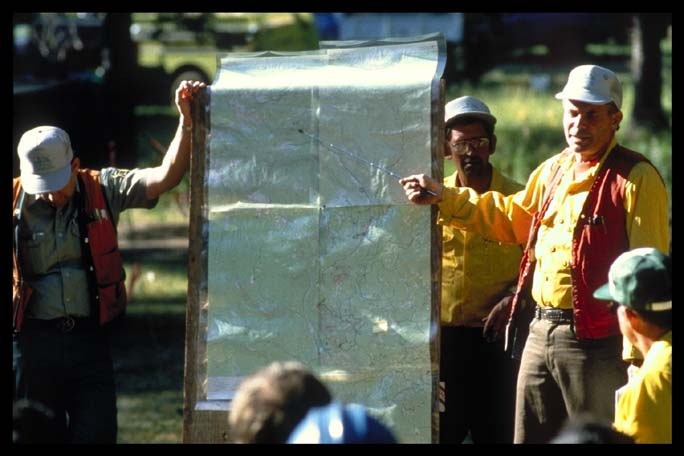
Briefing